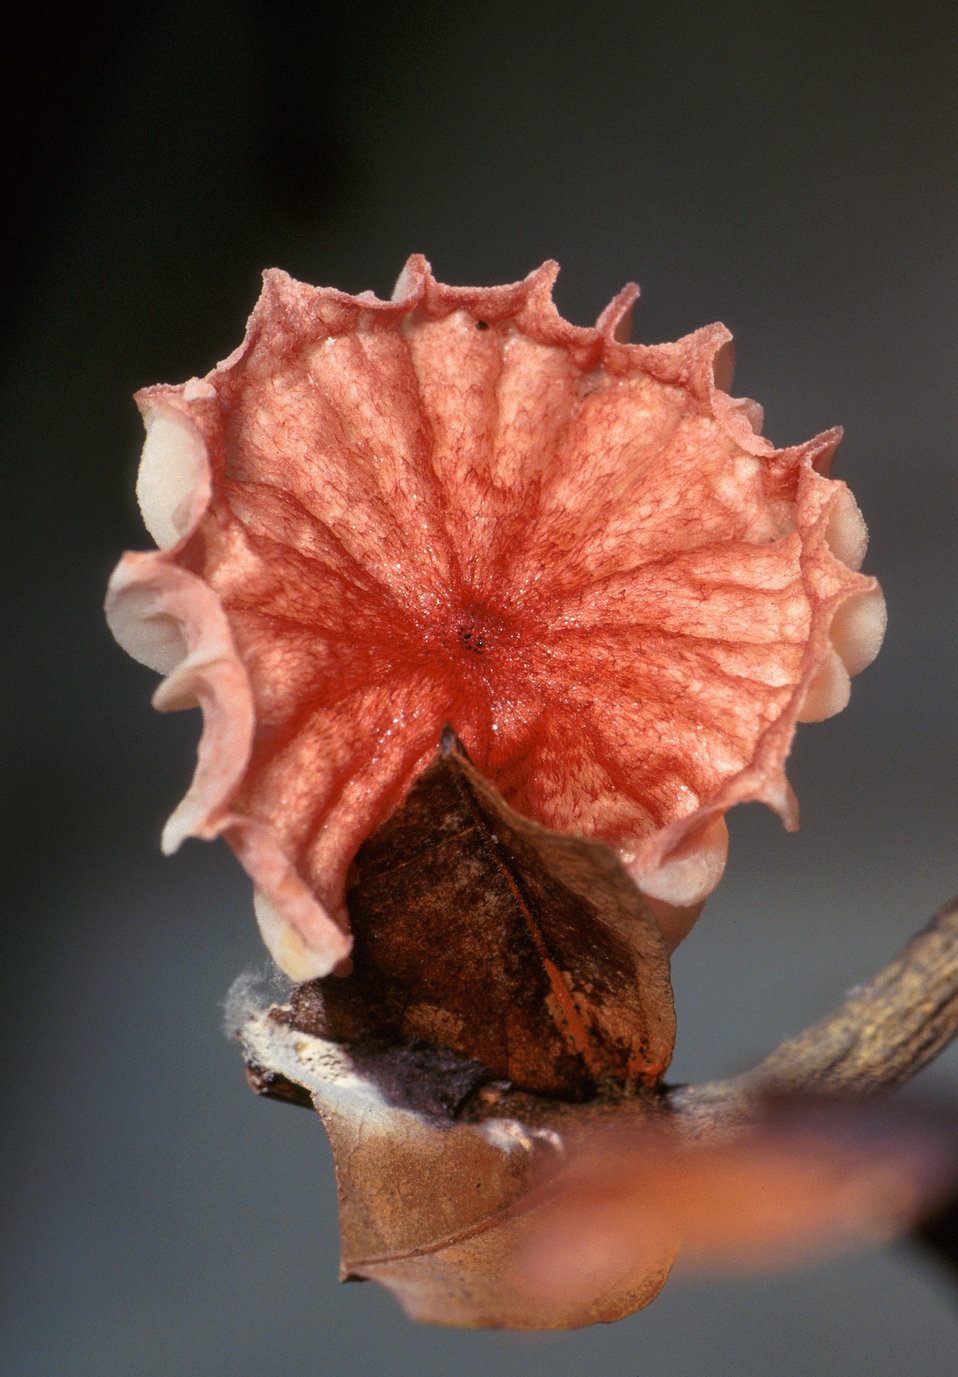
Spores released from the fan-shaped basidiocarp of this inch-wide Crinipellis perniciosa mushroom can infect cacao trees and drastically reduce yields of the beans from which cocoa and chocolate products are made. USDA photo Scott Bauer.